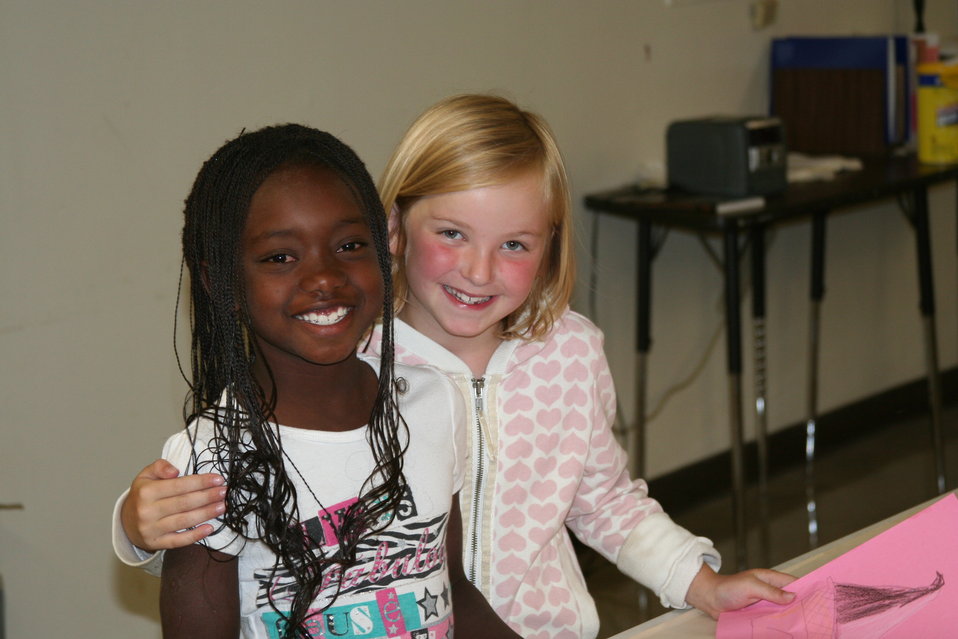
Creatures of the Night 2011